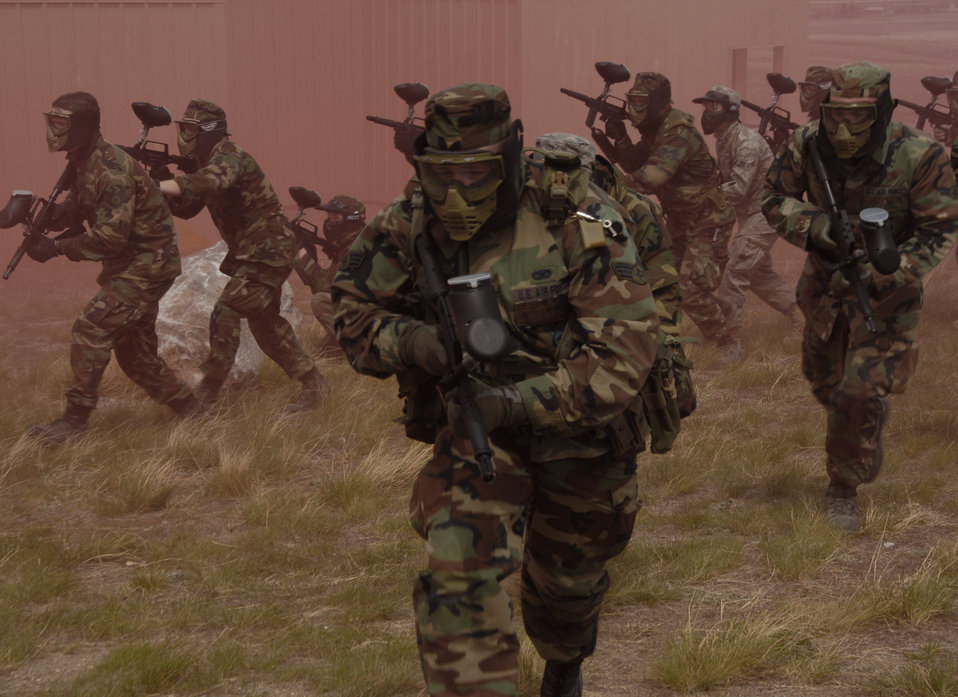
Paintball extreme

Members of the 185th Air Refueling Wing's security forces use paintball equipment to simulate live fire May 16 during military operations and urban terrain training for Operation Northern Thunder at Fort Harrison, Mont. The team is based in Sioux City, Iowa.